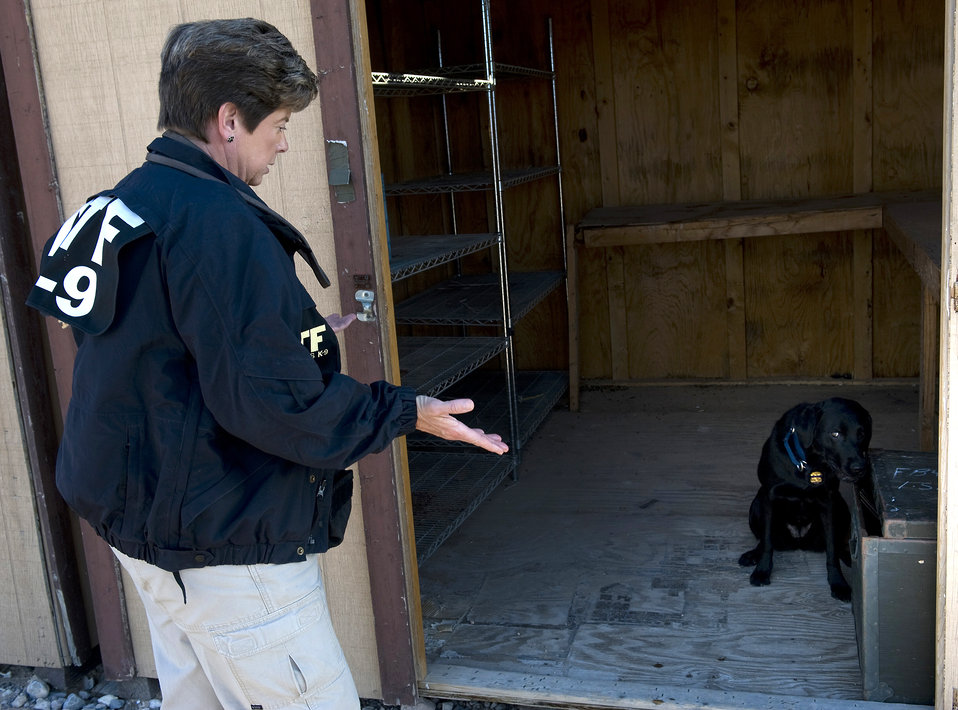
Nellis AFB officials host joint training exercise for local canine units

Lauren Marakas questions Ruthie to find where explosives are hidden Dec. 16, 2010, at Nellis Air Force Base, Nev., during a joint explosive detection training exercise. Mrs. Marakas is a senior special agent canine handler from the Bureau of Alcohol, Tobacco, Firearms, and Explosives, and Ruthie is an explosives detection canine.